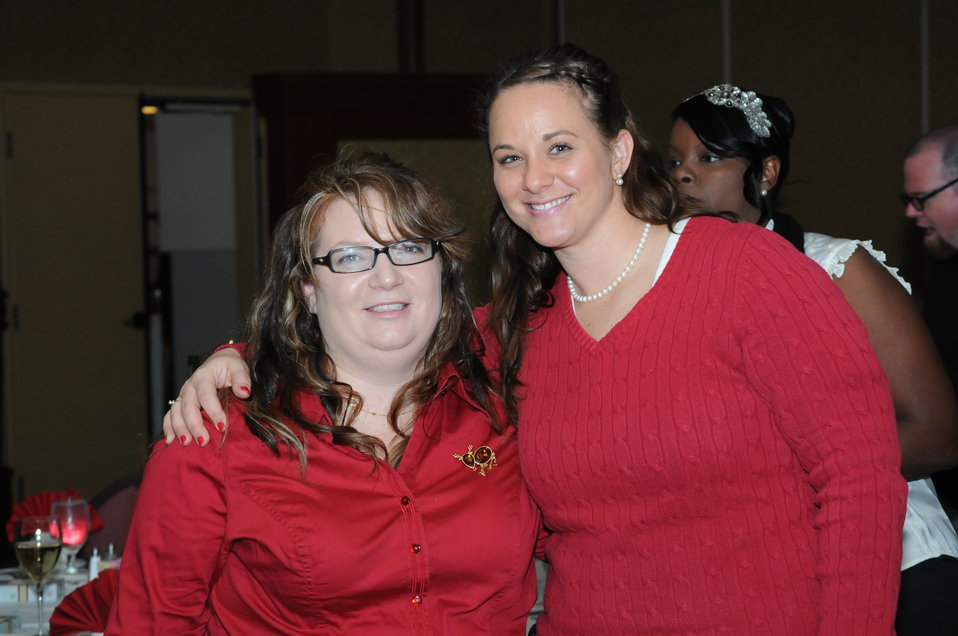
Sacramento District Holiday Party 2011